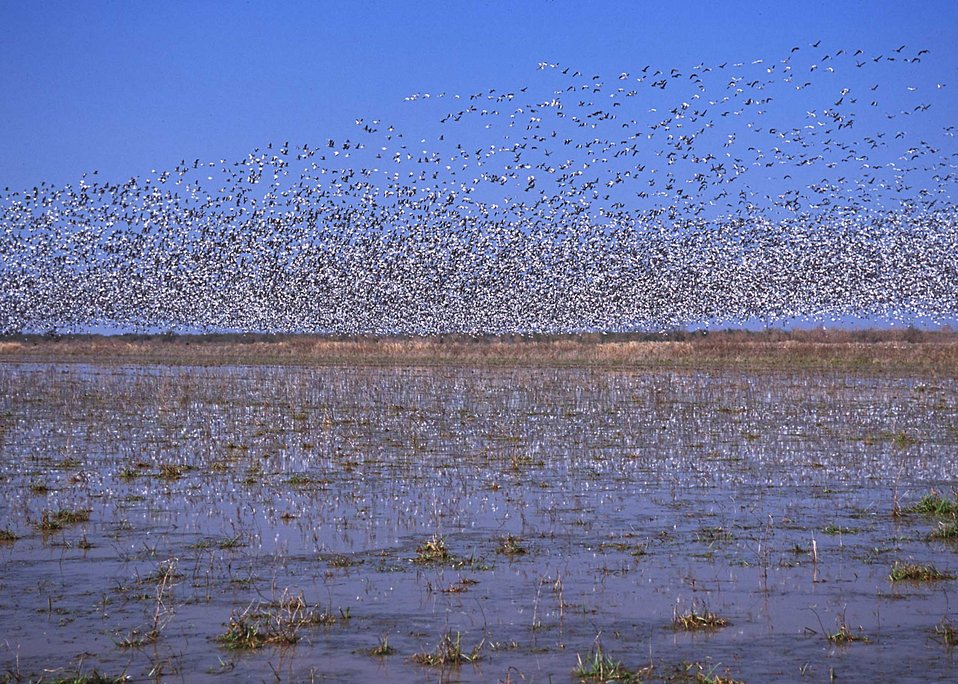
Flooded croplands near Gueydan, Louisiana attract thousands of geese in the winter.